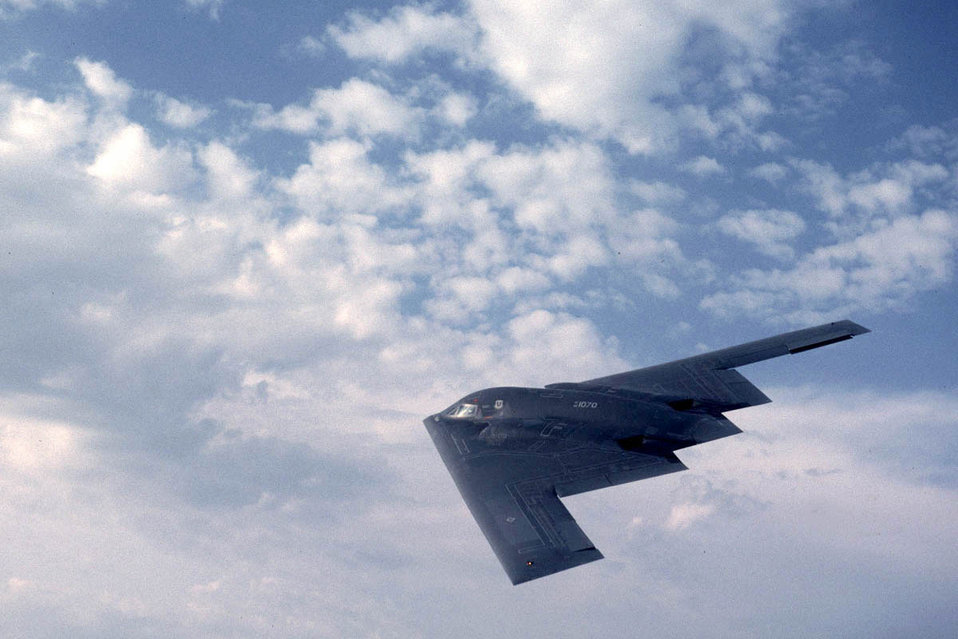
Enduring Spirit

OPERATION ENDURING FREEDOM -- The 509th Bomb Wing at Whiteman Air Force Base, Mo., took center stage in the war on terrorism when six B-2 Spirits participated in air strikes over Afghanistan during the first three days of Operation Enduring Freedom. All six of the B-2 sorties were longer than 40 hours, with the longest lasting more than 44 hours.